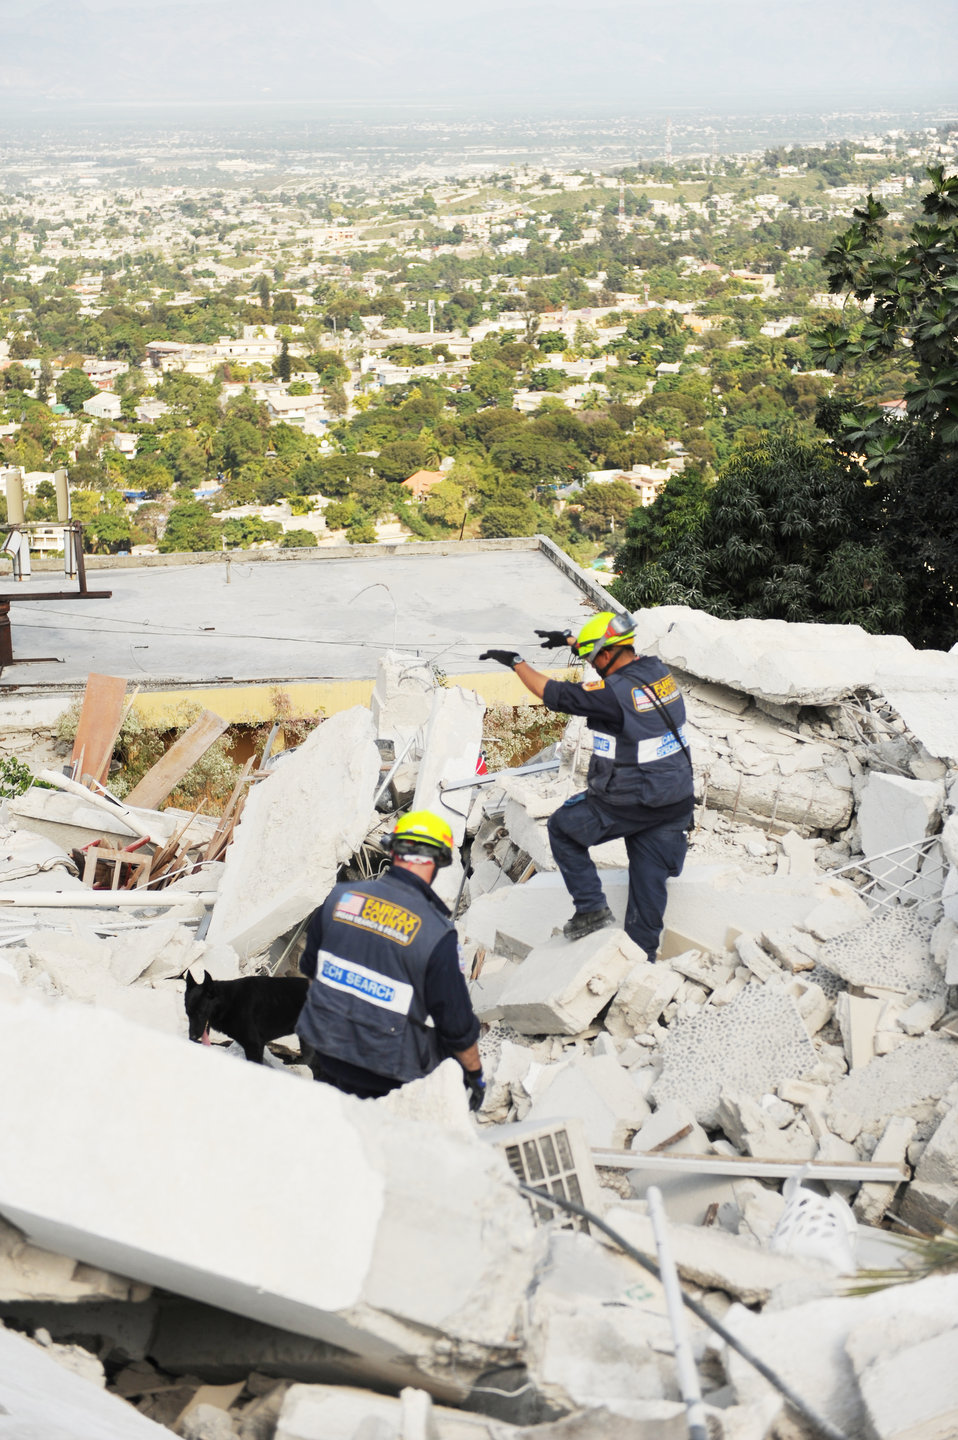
Haiti Earthquake Relief

Members of the Fairfax County Urban Search and Rescue Team, Va. search for survivors during rescue operations Jan 17, 2010 in Port-au-Prince, Haiti. Department of Defense assets have been dispatched to Haiti to assist with humanitarian assistance and disaster relief after a magnitude 7 earthquake hit the country Jan. 12, 2010.